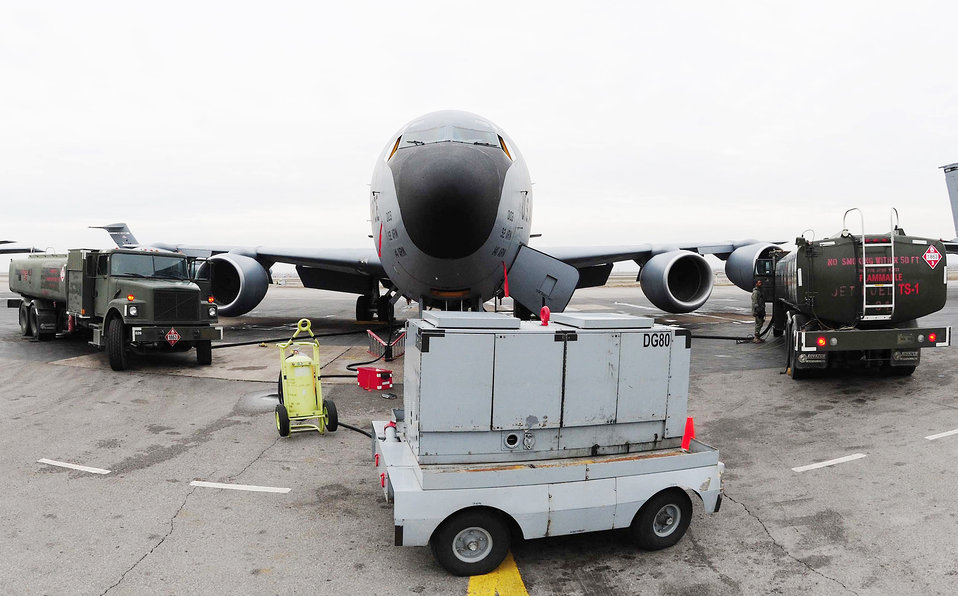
Pumping gas makes a difference

Airmen from the 376th Expeditionary Logistics Readiness Squadron Petroleum, Oil and Lubricants Flight perform a dual refuel of a KC-135 Stratotanker on the flightline Feb. 26, 2010, at the Transit Center at Manas, Kyrgyzstan.